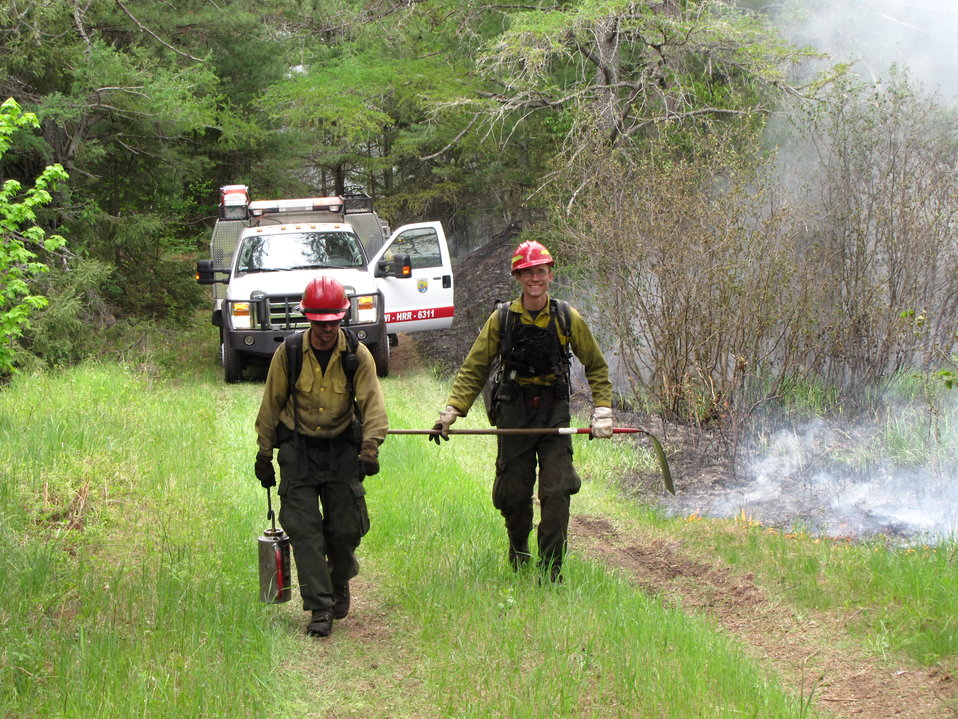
The Hand Crew

Lighting a back fire off Pine Creek Road to keep the main fire suppressed and contained.